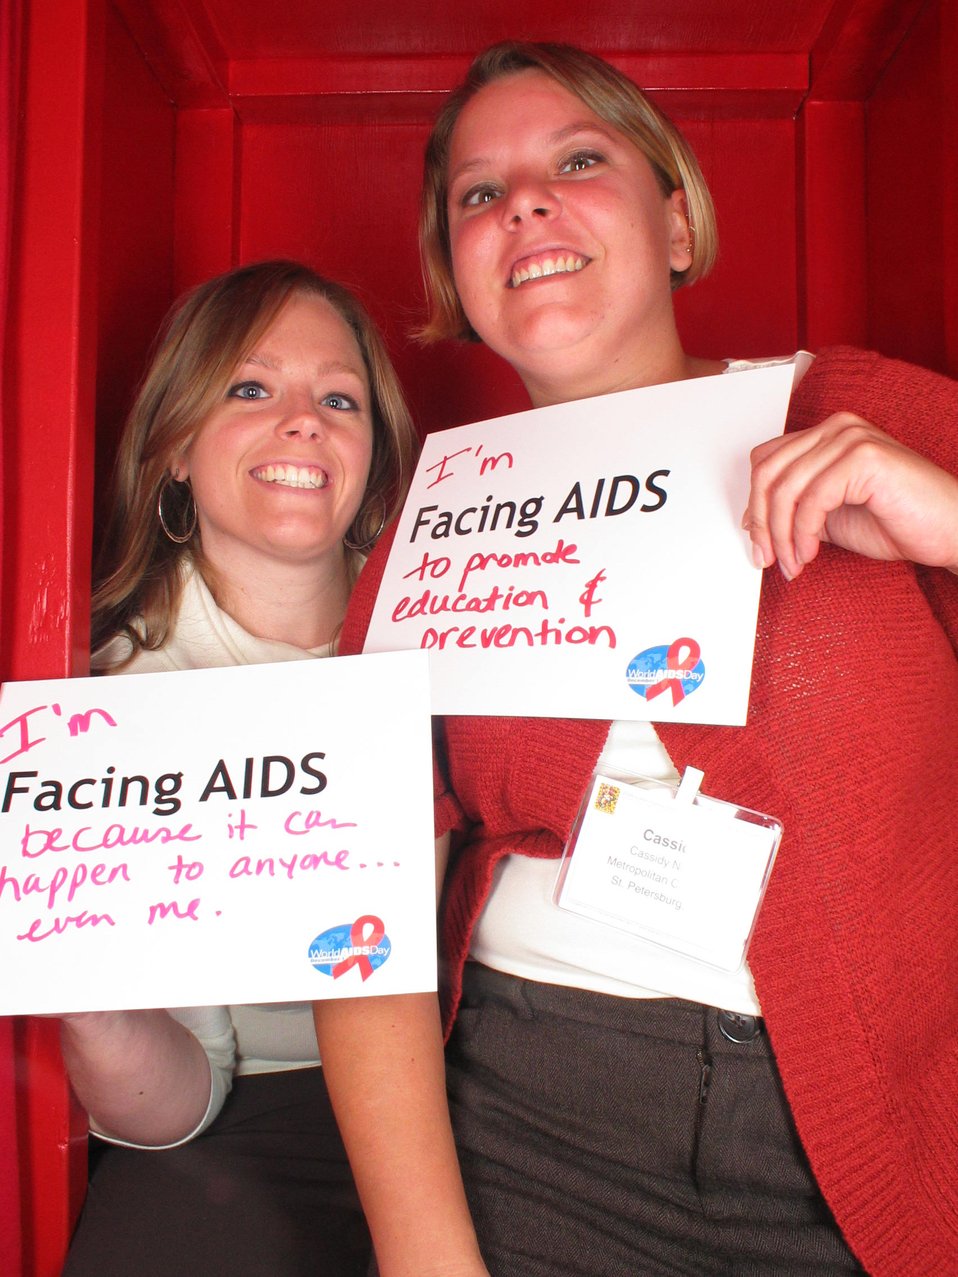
I'm Facing AIDS because it can happen to anyone...even me. I am Facing AIDS to promote education and prevention.